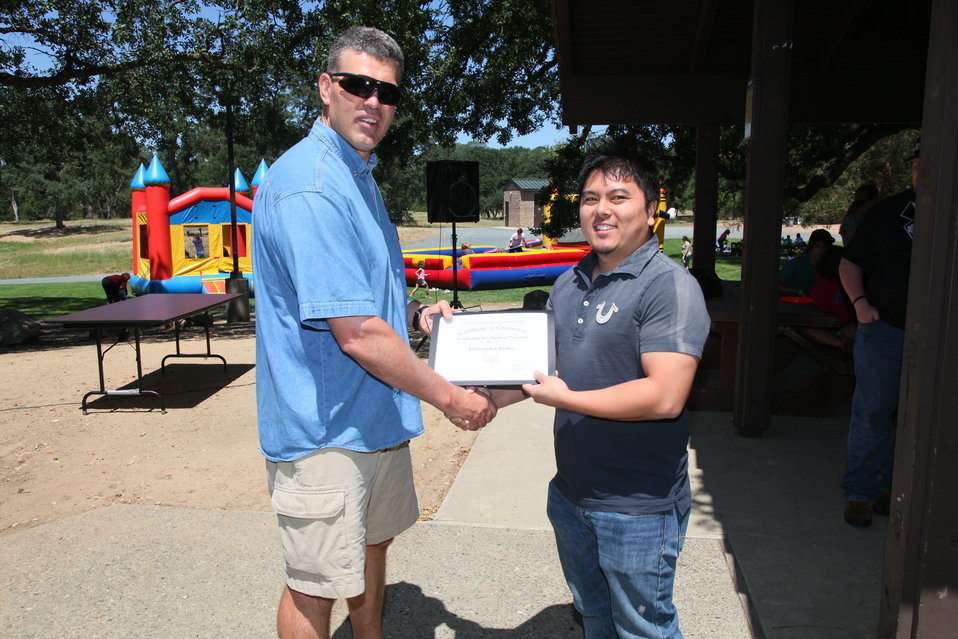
2011 Annual Picnic